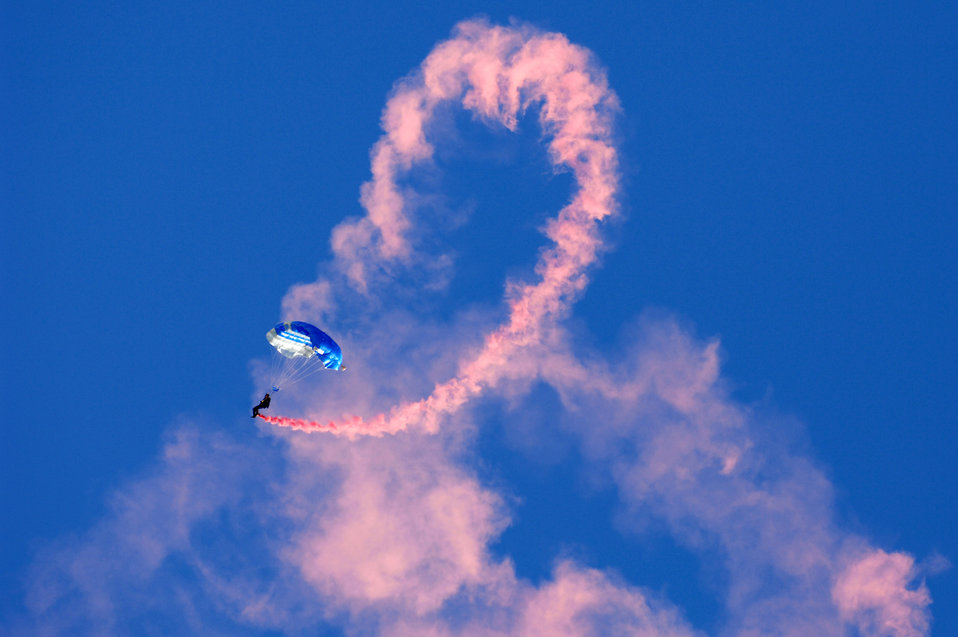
Thunderbirds close air show season

The U.S. Air Force Academy Parachute Team